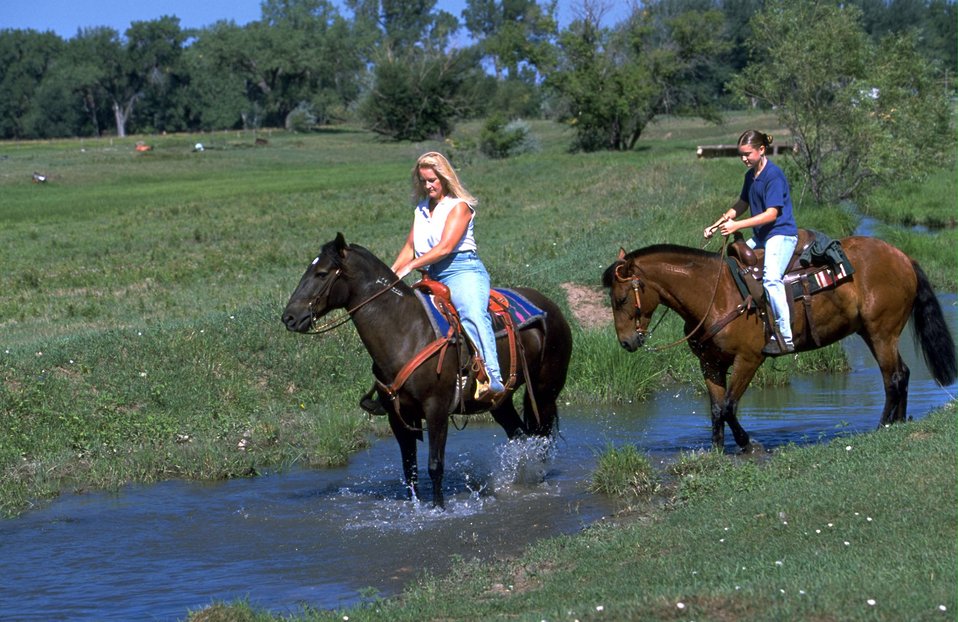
Adopted Horses, with riders, standing in Creek